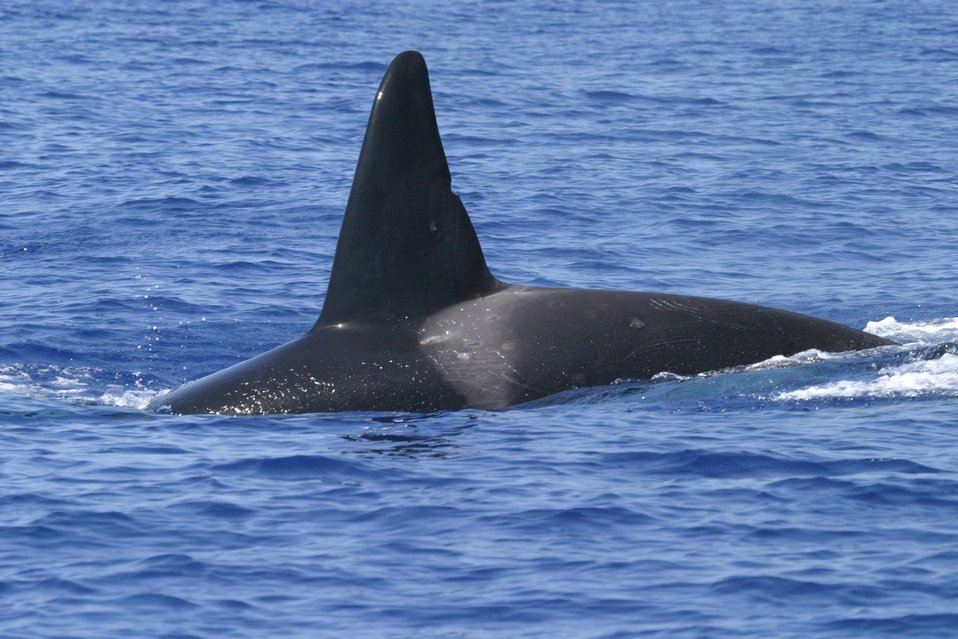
Killer whales